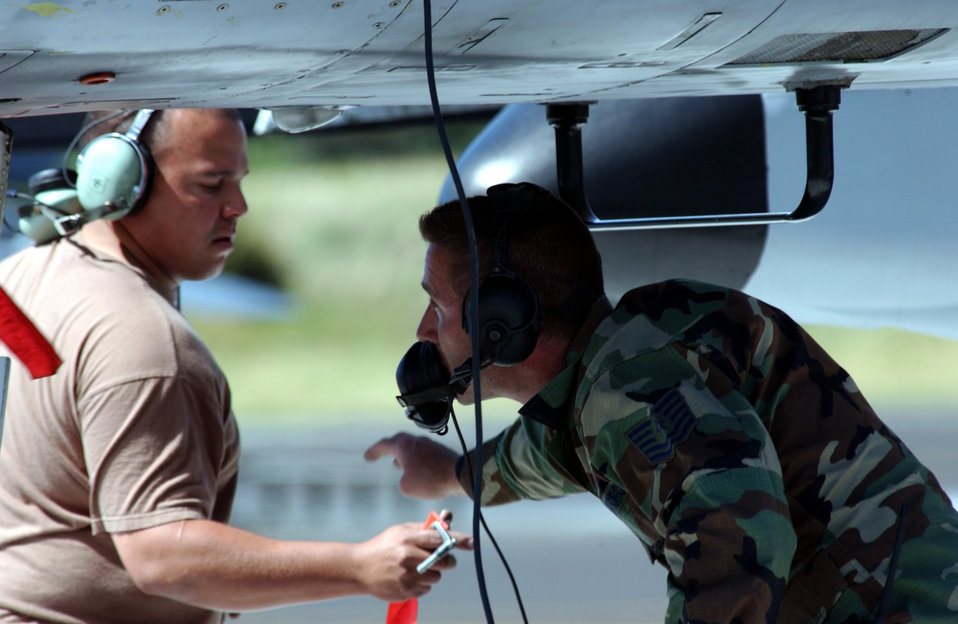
Post check

LAJES FIELD, Azores -- Tech. Sgt. Matthew Rockstad (right) and Staff Sgt. Alexis Adorno do post-checks on an A-10 here May 14. Both are assigned to the 355th Aircraft Maintenance Squadron, Davis-Monthan Air Force Base, Ariz.